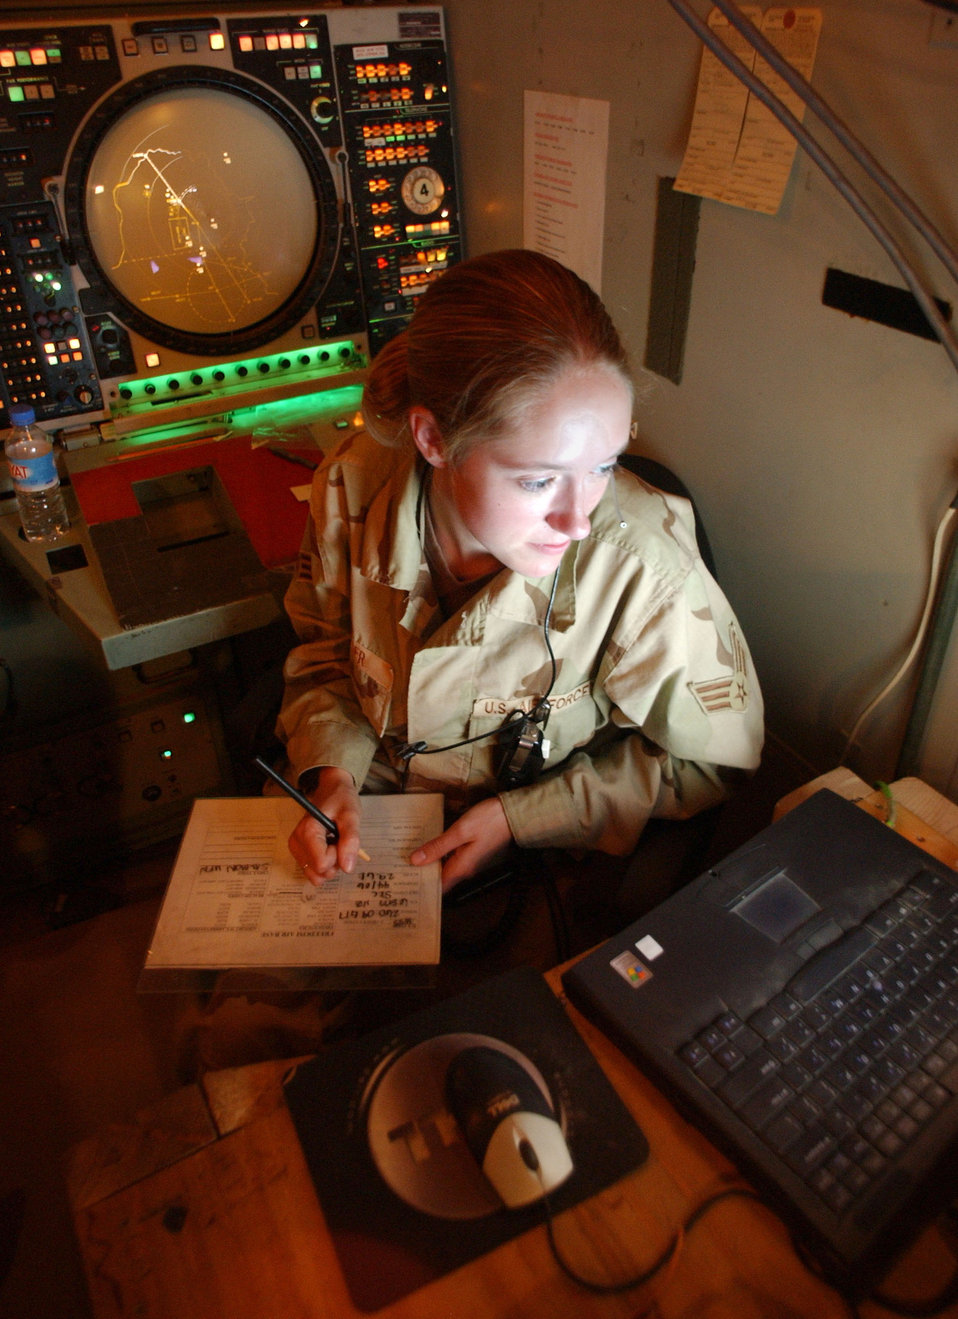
What's the weather like?

OPERATION IRAQI FREEDOM -- Senior Airman Kaethe Jo Binder of the 506th Expeditionary Operation Support Squadron gathers weather information to brief inbound and outbound aircraft from Kirkuk Air Base, Iraq. The air traffic control team here is responsible for guiding all air traffic in the northern third of Iraq.